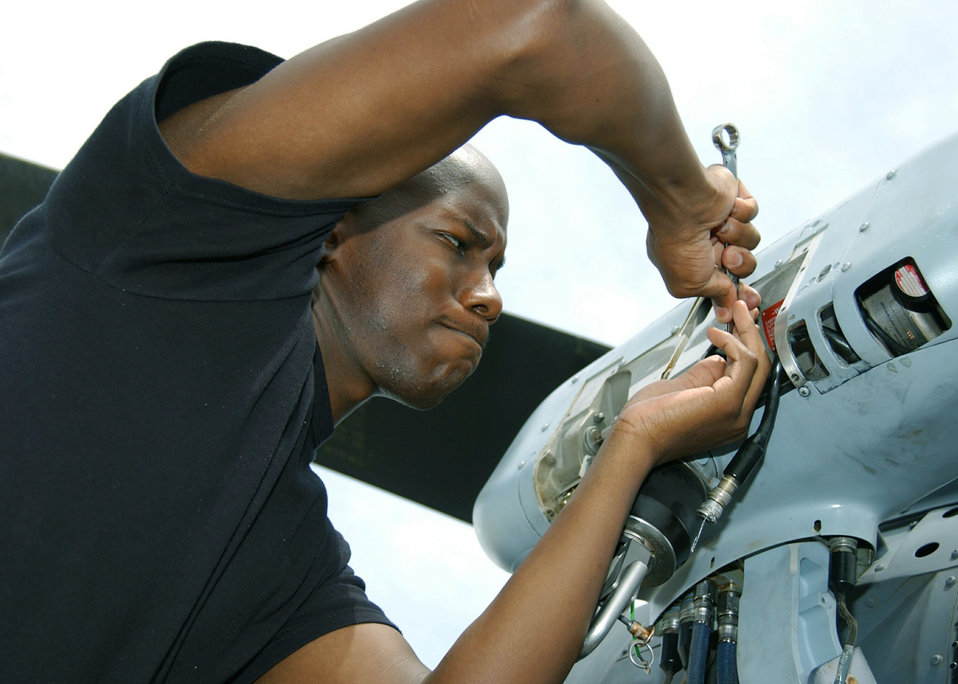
In a fix

DAVIS-MONTHAN AIR FORCE BASE, Ariz. -- Senior Airman Anthony Moore repairs a hoist on an HH-60 Pave Hawk helicopter here Aug. 16. The hoist is used during rescue missions. Airman Moore is an electro-environmental specialist with the 563rd Maintenance Squadron.